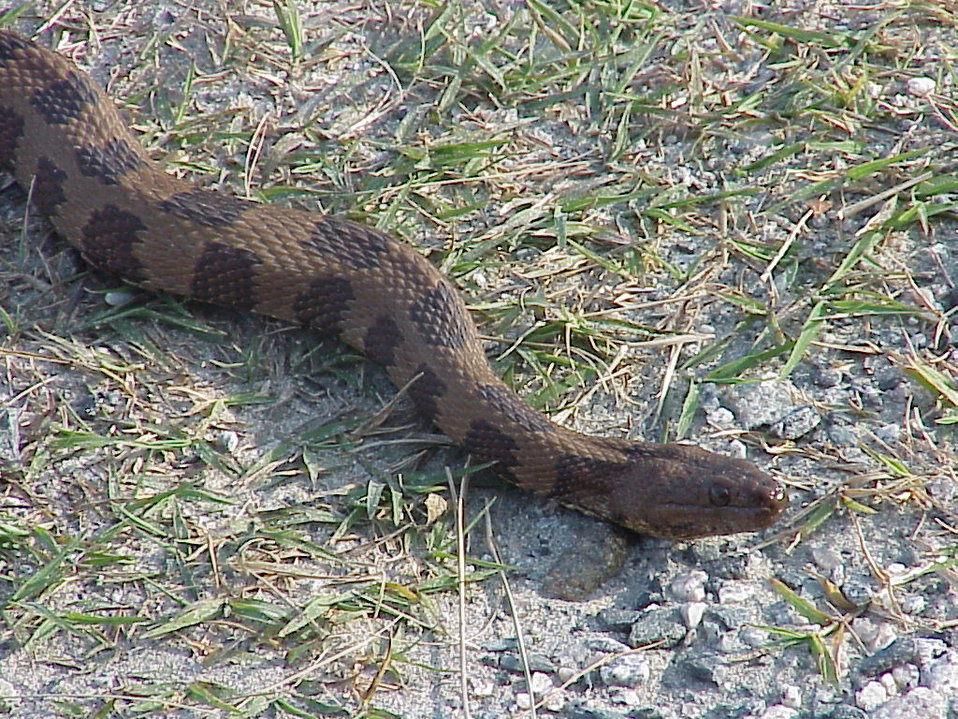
Brown watersnake at Back Bay National Wildlife Refuge in Virginia.